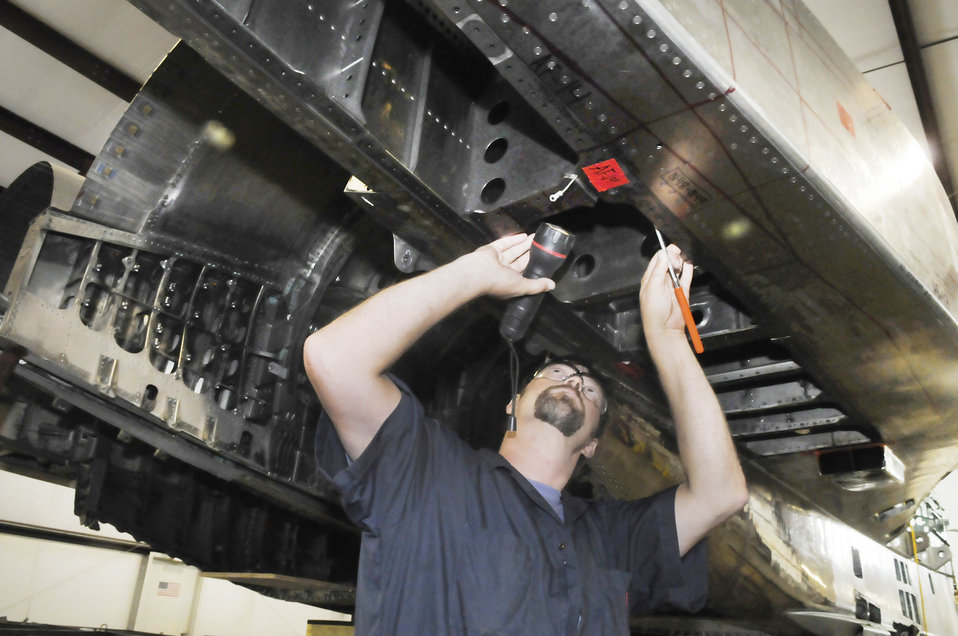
Examining an F-15 Eagle

Steve Hartley, site manager for S&K Technologies in Byron, Ga., near Robins Air Force Base, Ga., examines the underbelly of an F-15 Eagle prior to disassembly. The crew is tearing down the aging fighter to see how well it is holding up.